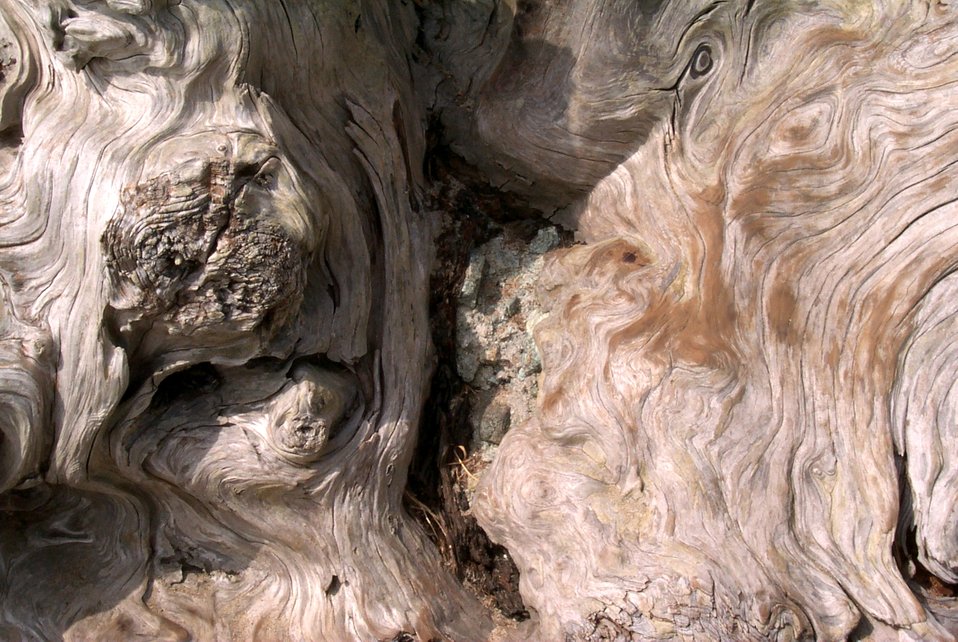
Driftwood patterns